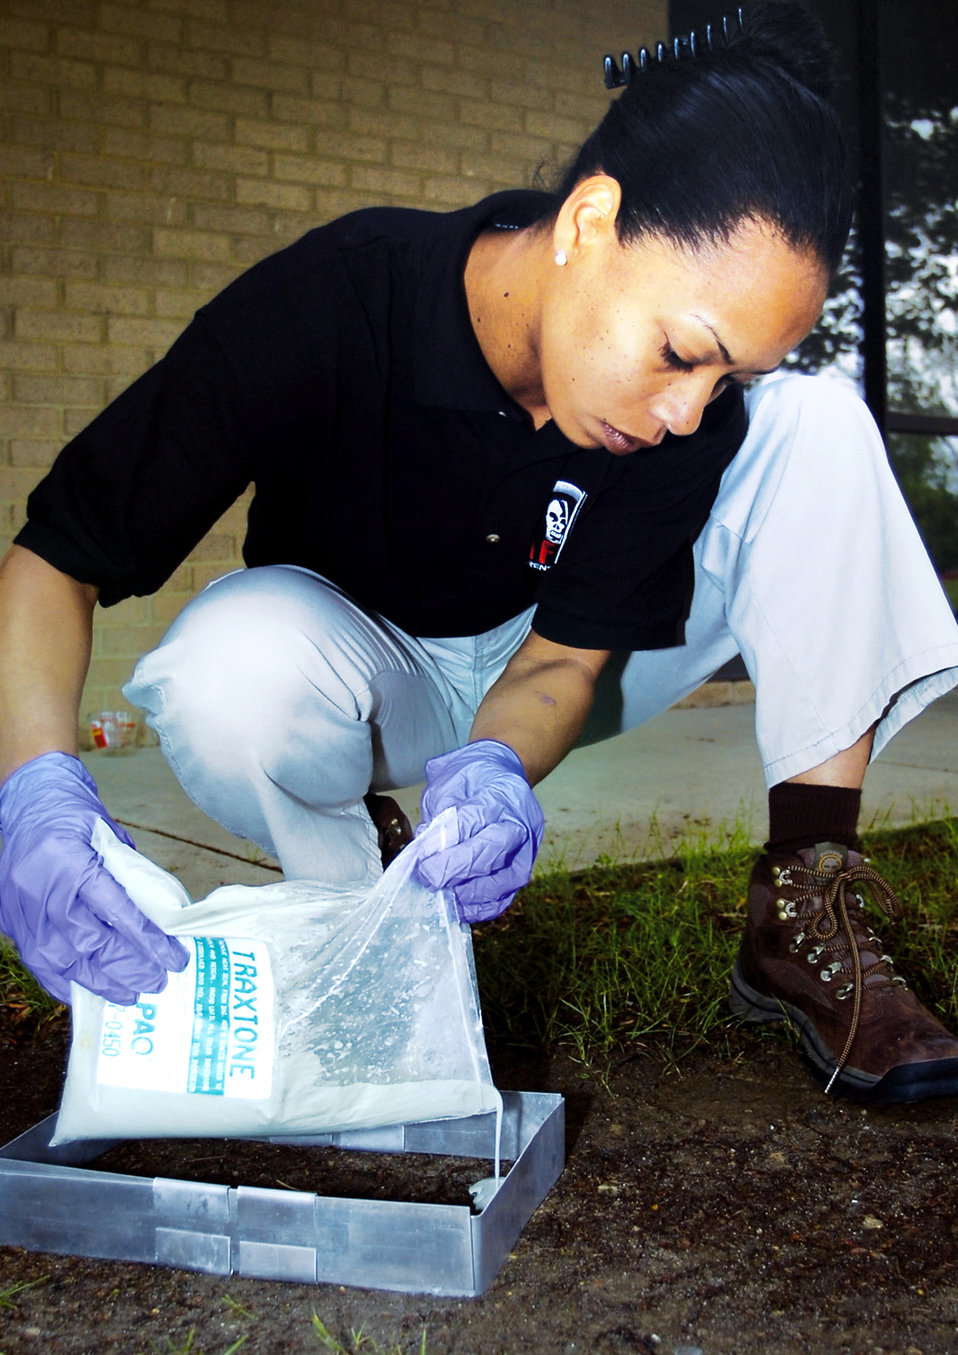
Forensic experts identify keys to crimes

Special Agent Tam Reed carefully pours a dental solution into a mock footprint to get a three-dimensional impression of the shoe sole. The technique, called casting, results in a hardened mold in about 45 minutes. It can also be used to take car tire impressions as well as two-dimensional impressions, such as footprints on slick floor surfaces or fingerprints on window sills. Agent Reed is a forensic science consultant with the Air Force Office of Special Investigations' 33rd Field Investigations Squadron.